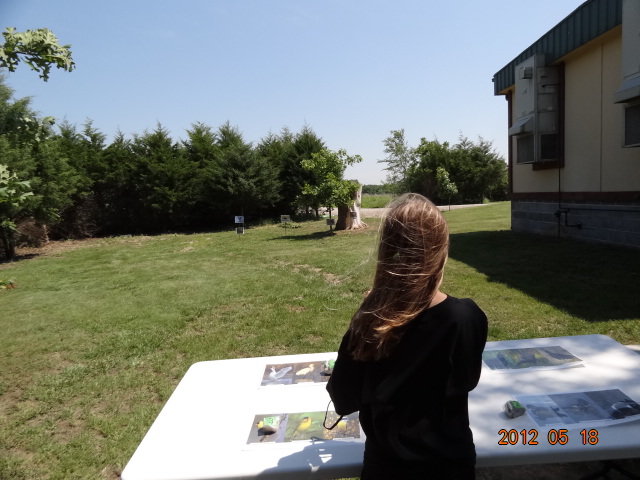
International Migratory Bird Day 2012

Marais des Cygnes National Wildlife Refuge